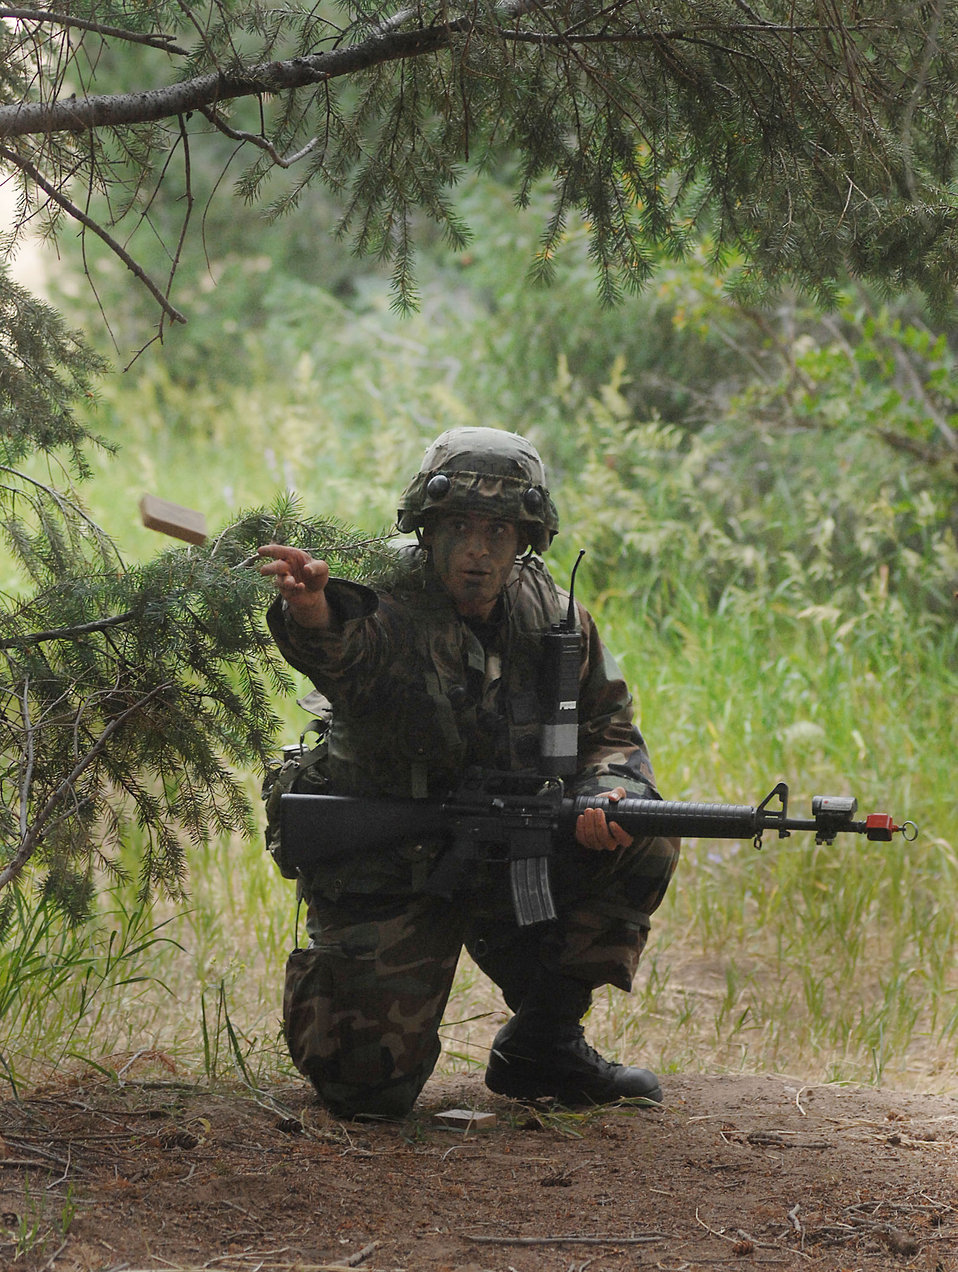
Global Engagement teaches leadership, base deployment

Cadet 3rd Class Farino Salvatore throws ammunition to a fellow cadet while being attacked by opposition forces during the Global Engagement course July 10 at the U.S. Air Force Academy in Colorado. The purpose of Global Engagement is to lay the foundation for Air Force Academy Cadets of attitudes, knowledge and skills necessary to lead, fight, and win in a dynamic and diverse global environment.